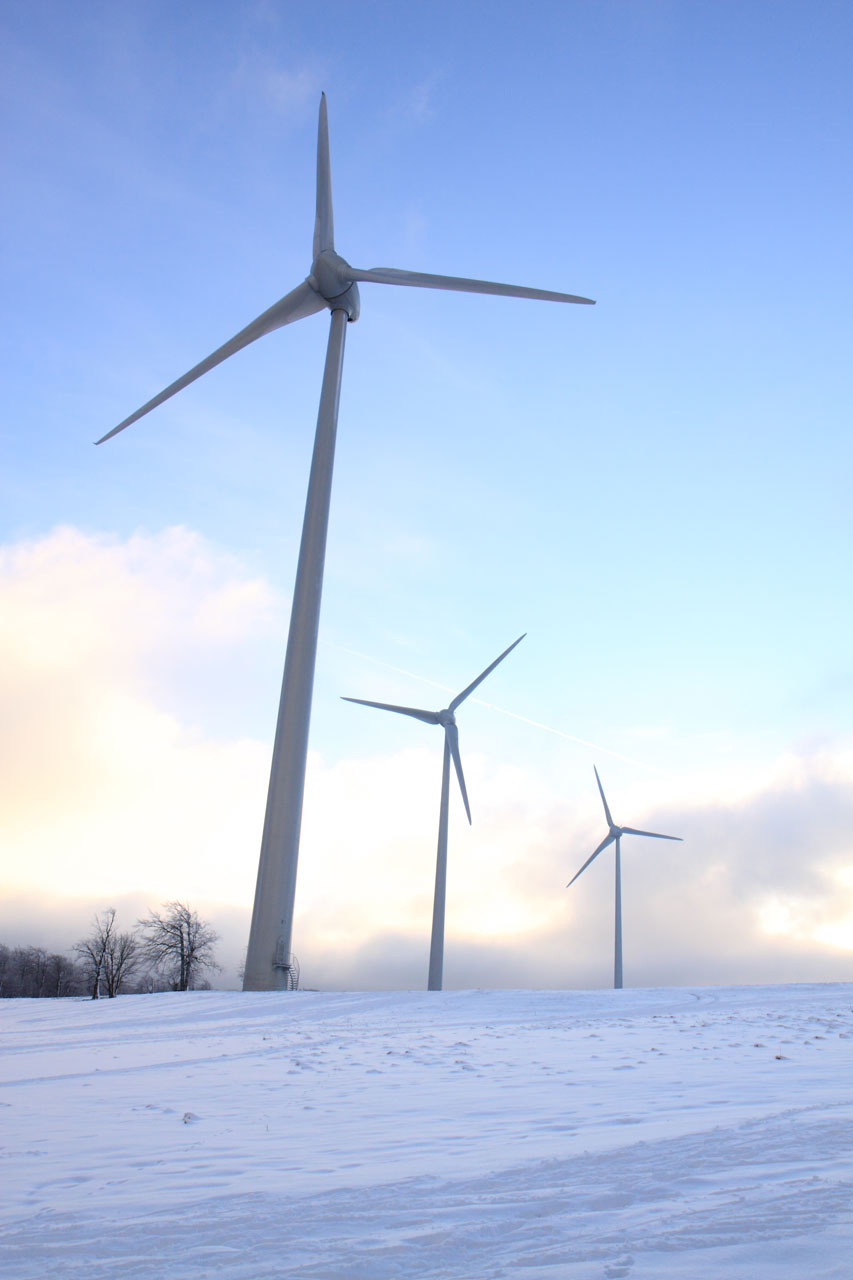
Wind power

Three wind turbines harvesting wind energy in winter.